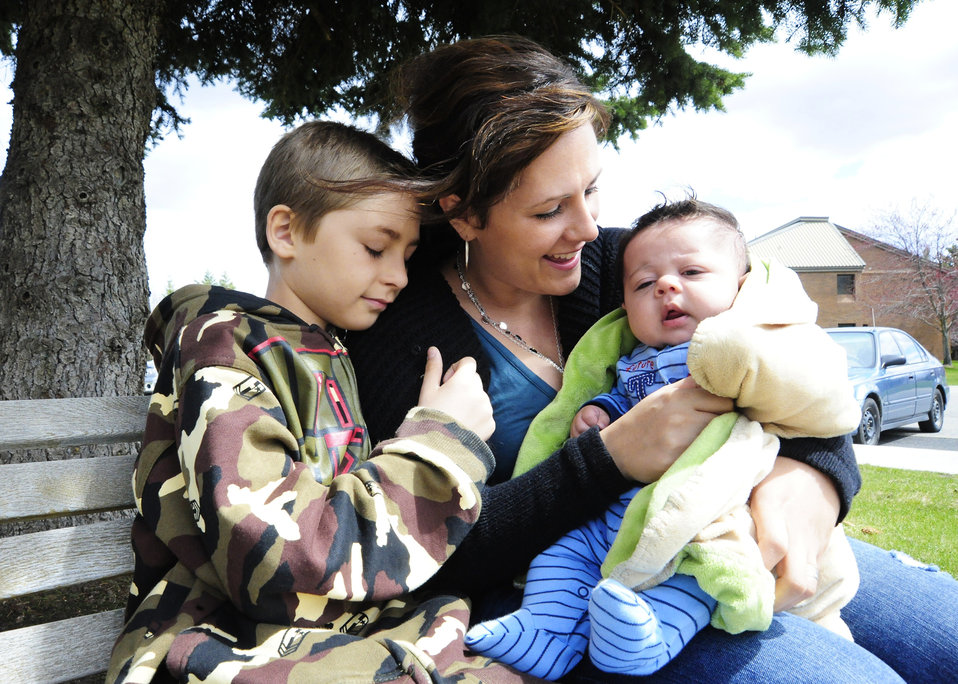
Air Force spouse, children recall evacuation to Spokane following Japan earthquake

Jenevra Watkins, and her sons Quintus, 3 months old, and Antonio, 9, huddle together April 28, 2011, at the Airman Family and Readiness Center at Fairchild Air Force Base, Wash. The family was stationed in Japan and evacuated shortly after the earthquake in March.